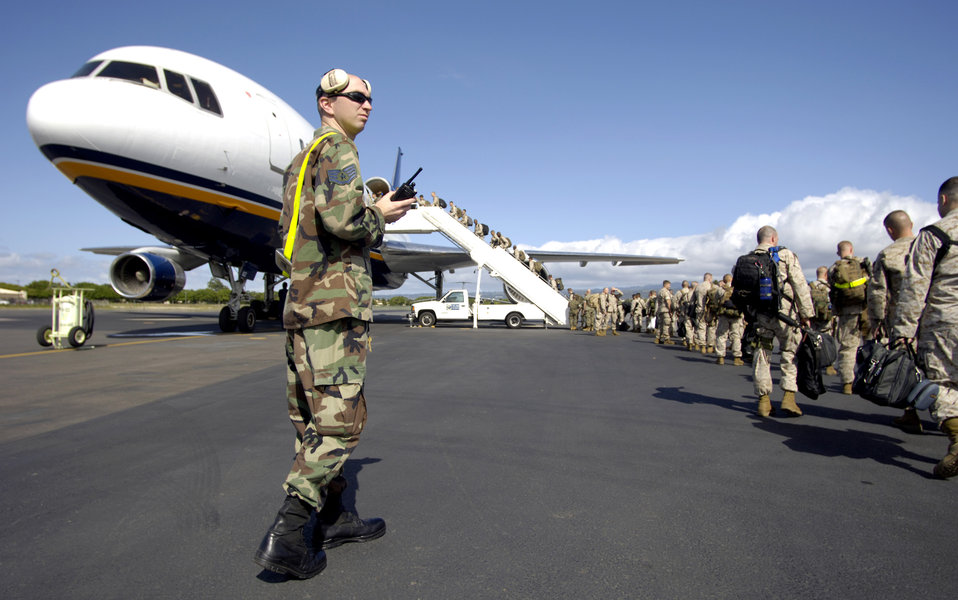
Boarding time

HICKAM AIR FORCE BASE, Hawaii (AFPN) -- Staff Sgt. Lucas Foster oversees the upload of Marines from the 1st Battalion, 3rd Marine Regiment at Marine Corps Base Hawaii, Kaneohe Bay. Sergeant Foster is with 735th Air Mobility Squadron.